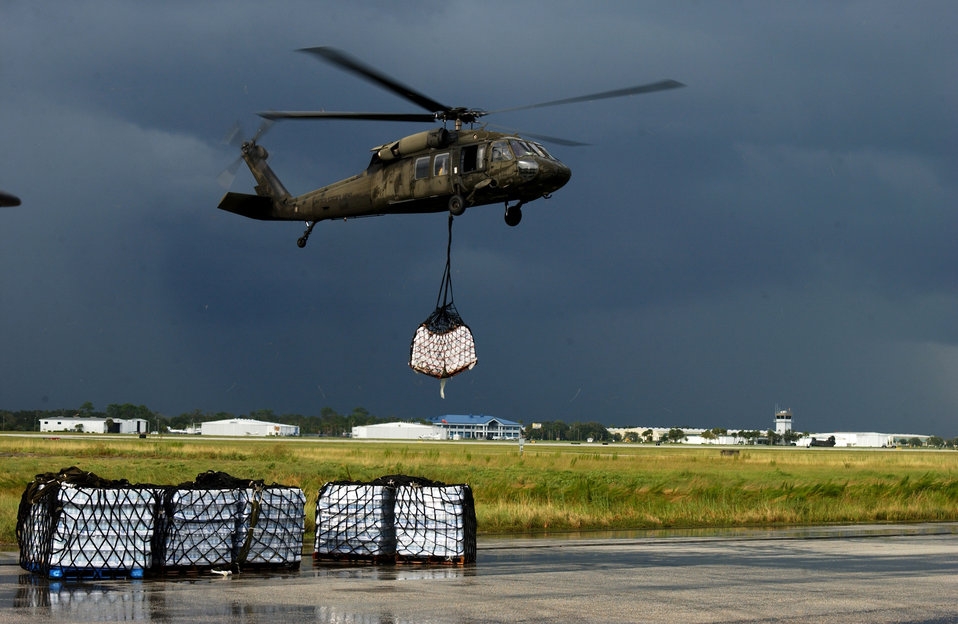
Turning back

LAKELAND, Fla. -- A UH-60 Blackhawk from the Alabama National Guard returns to Lakeland Linder Airport after being diverted by an ominous summer storm here Sept. 9. The Blackhawks have been transporting supplies to areas of Florida affected by Hurricane Frances.